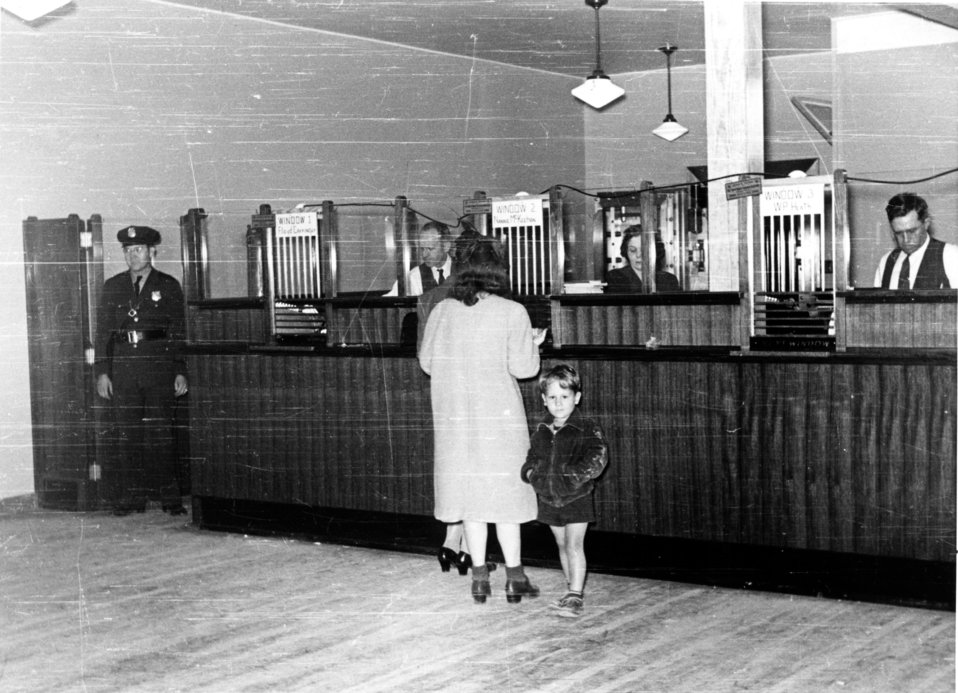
Business activity at Oak Ridge